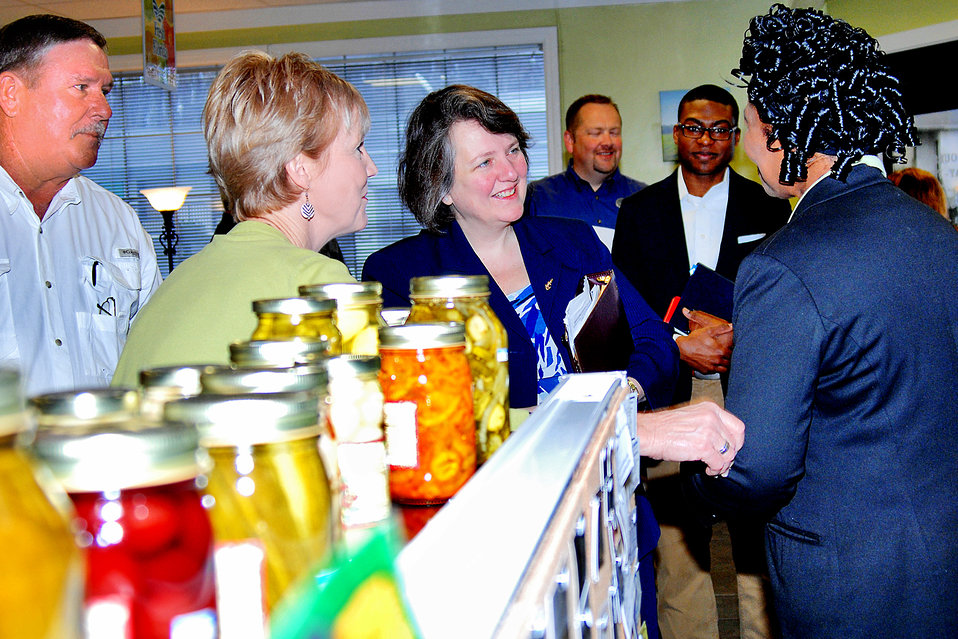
Agriculture Deputy Secretary Kathleen Merrigan meets with members of the at Fifth Generation Farms fresh market in Lake City, Florida on Friday, Jan. 27, 2012.